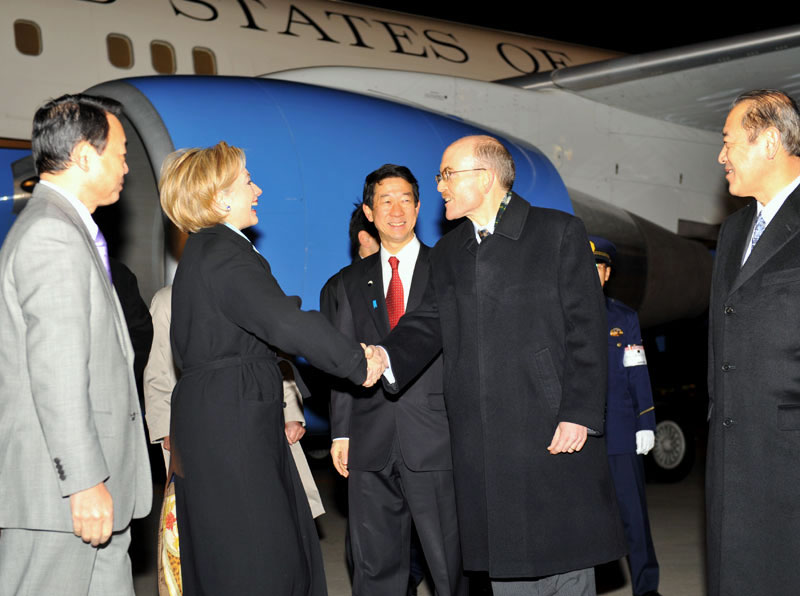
Secretary Clinton Arrives in Tokyo

Secretary of State Clinton shakes hands with Embassy Charge d'Affairs James P. Zumwalt on the tarmac at Tokyo's Haneda Airport on Feb. 16, 2009.